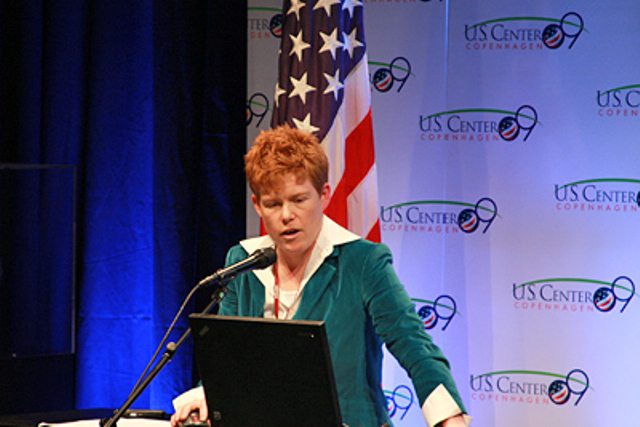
'Advancing Carbon Sequestration Technology Presentation at COP-15

Holmes Hummel, Senior Policy Advisor for Policy and International Affairs at U.S. Department of Energy gives a presentation on 'Advancing Carbon Sequestration Technology' during COP15 (Conference of the Parties to the UN Framework Convention on Climate Change) in Copenhagen, Denmark December 11, 2009.